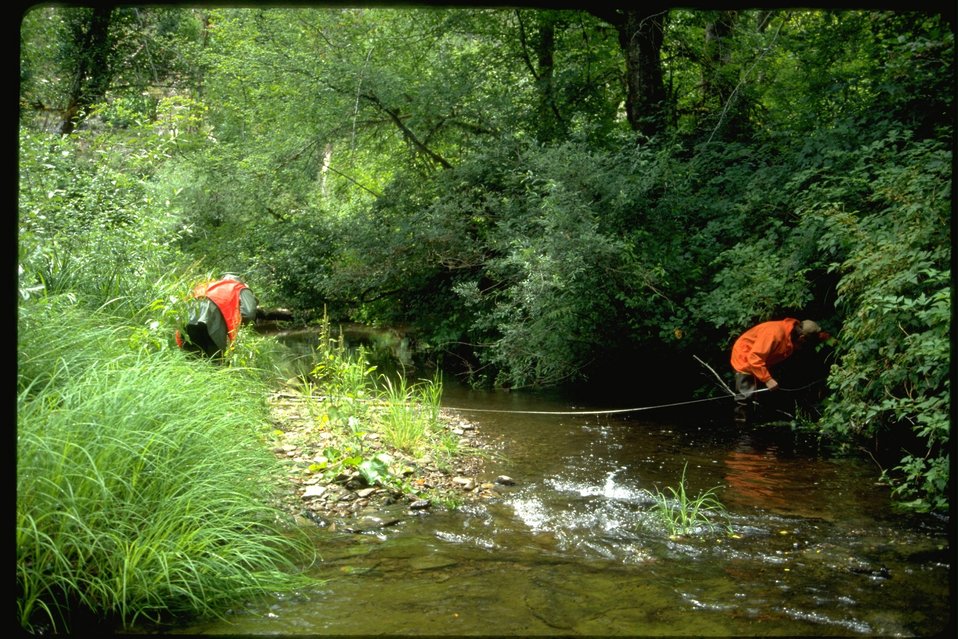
Sarah and Russ surveying Smith Creek during habitat study.